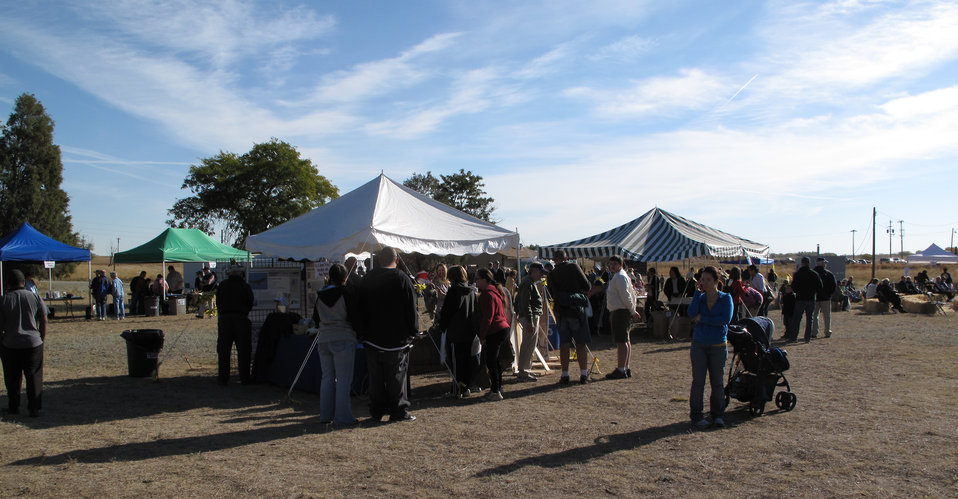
Refuge Round-up 2010

The art booth provided many different activities for the kids to do from making their own paddle ball to designing their own picture frame.